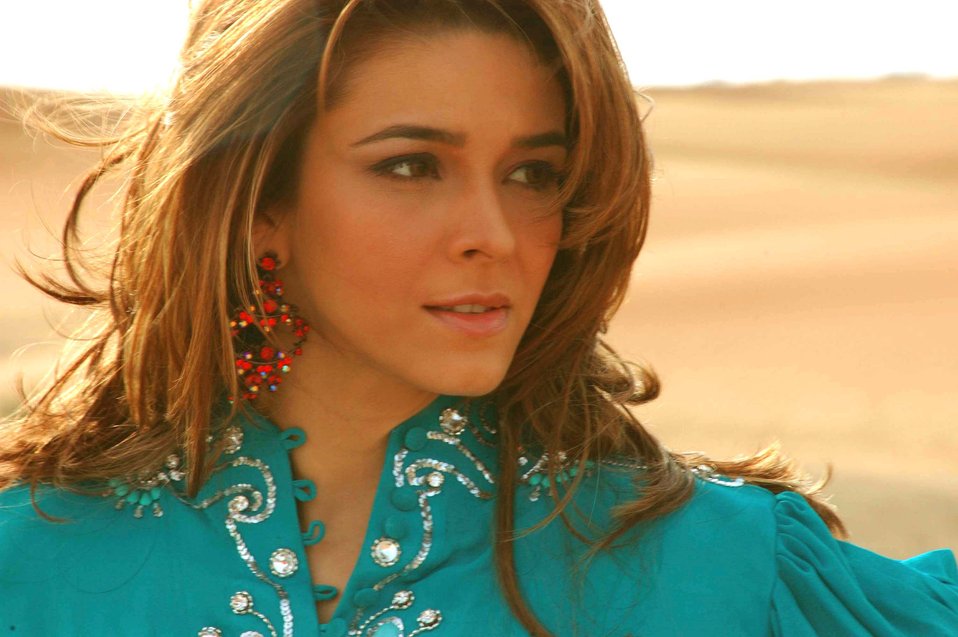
Raageshwari